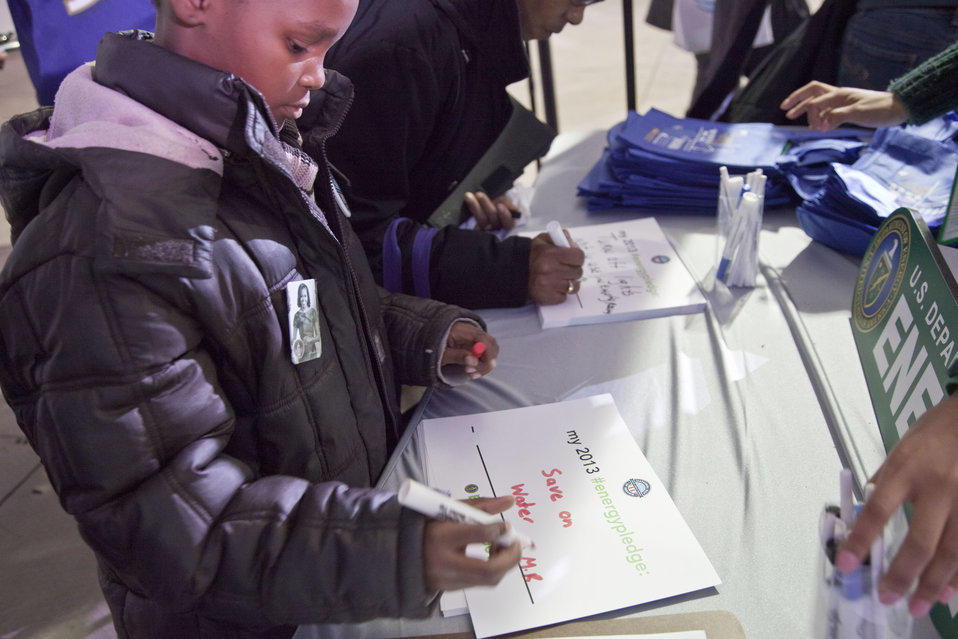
What's your #energypledge?